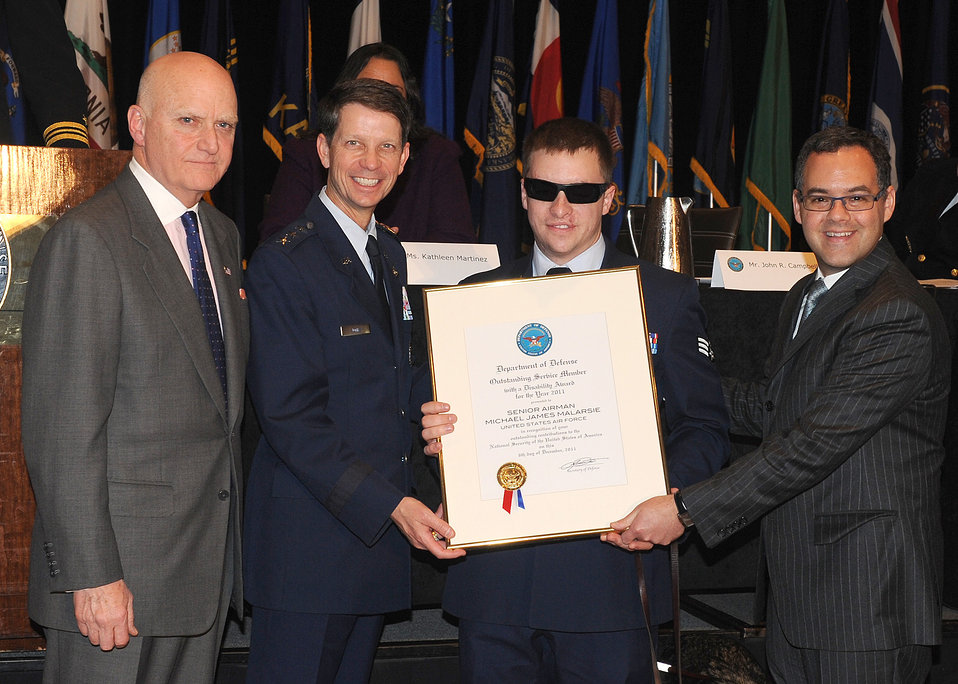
Three Air Force members honored at DOD disability awards ceremony

Senior Airman Michael J. Malarsie receives his Department of Defense Outstanding Service Member with a Disability award Dec. 6, 2011, from John R. Campbell, Lt. Gen. Darrell Jones and Daniel Ginsberg during the 31st Annual DOD Disability Awards ceremony at the Hyatt Regency Hotel in Bethesda, Md. The award highlights the valuable contributions to national security made by individuals with disabilities. Malarsie is the recovering airmen mentorship program administrator, Campell is the Deputy Assistant Secretary of Defense for Wounded Warrior Care and Transition Policy, Jones is the Air Force deputy chief of staff for manpower, personnel and services and Ginsberg is the Air Force assistant secretary for manpower and reserve affairs.